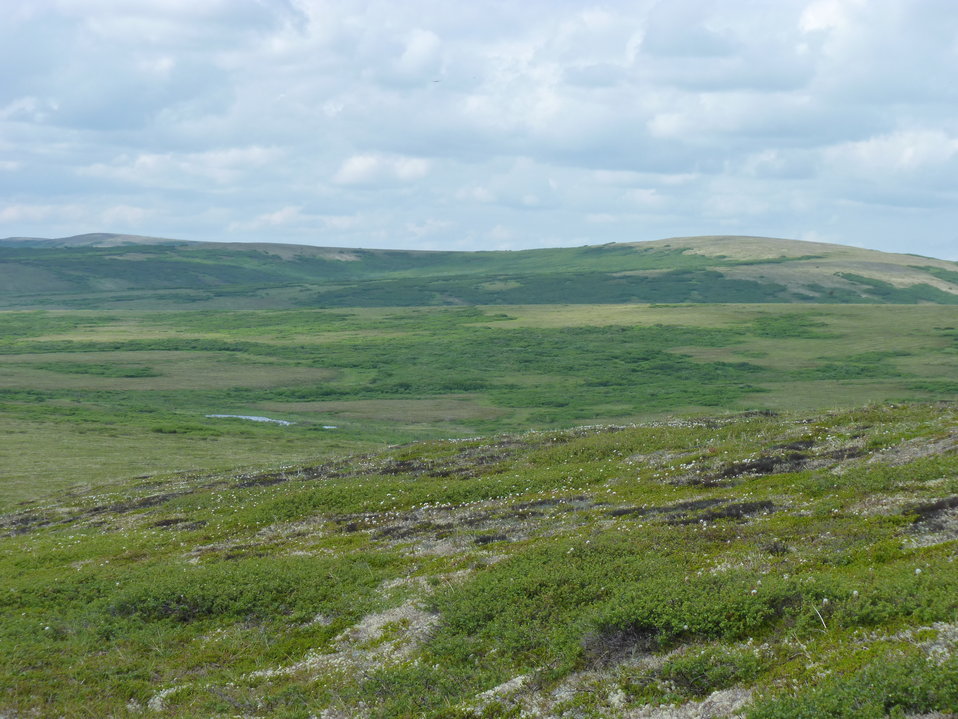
Andreafsky Wilderness, Yukon Delta National Wildlife Refuge